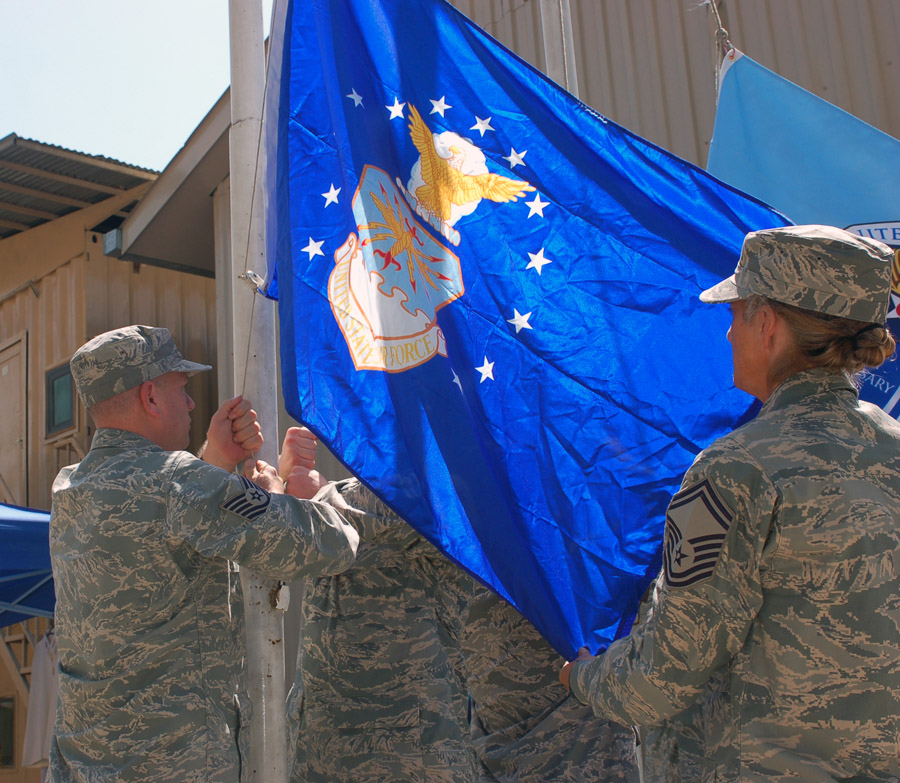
Airmen in Afghanistan pay tribute to Air Force anniversary

Tech. Sgt. Kirby Pyka and Senior Master Sgt. Elma Taylor raise the Air Force flag during a ceremony as part of the service's 60th Anniversary celebration Sept. 14 at Camp Eggers in Kabul. Both are with the Combined Security Transition Command-Afghanistan's logistics directorate. Sergeant Taylor is deployed from McGuire Air Force Base, N.J. and Sergeant Pyka's home station is Eglin AFB, Fla.